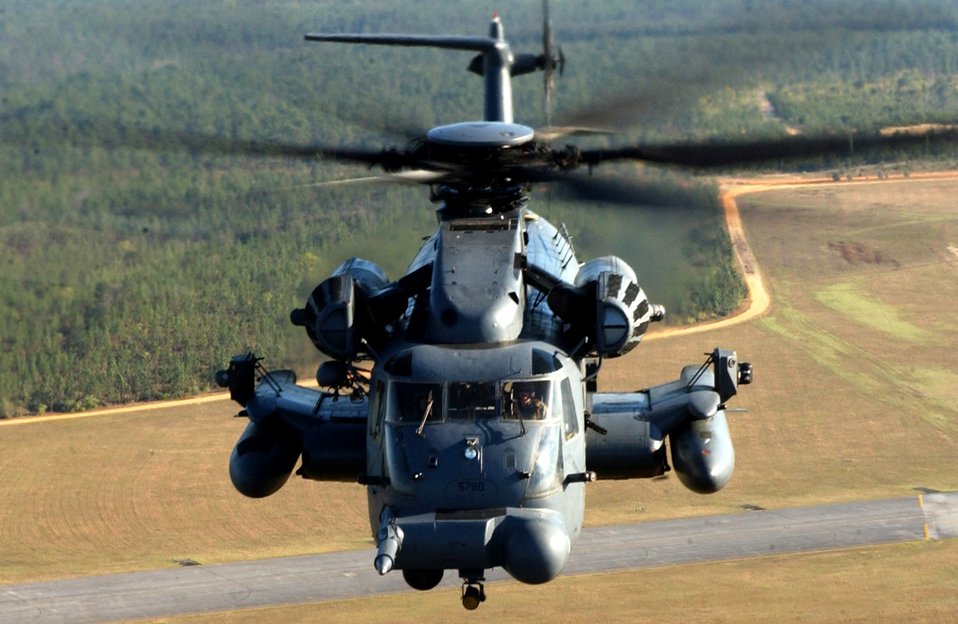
Airmen helping transport people from Lebanon

Air Force MH-53 Pave Low helicopters similar to this one are helping transport people from Lebanon to Cyprus. Long-range helicopters from the 352nd Special Operations Group at Royal Air Force Mildenhall, England, are operating from Akrotiri, Cyprus.